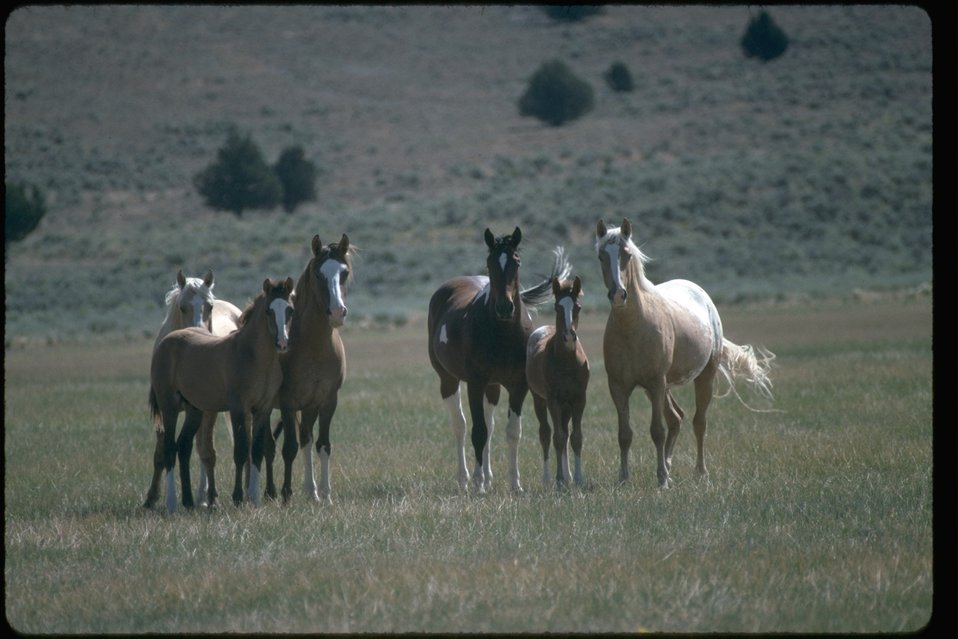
Palomino Buttes HMA Wild Horses on the range. West of Burns in Southeastern Oregon.